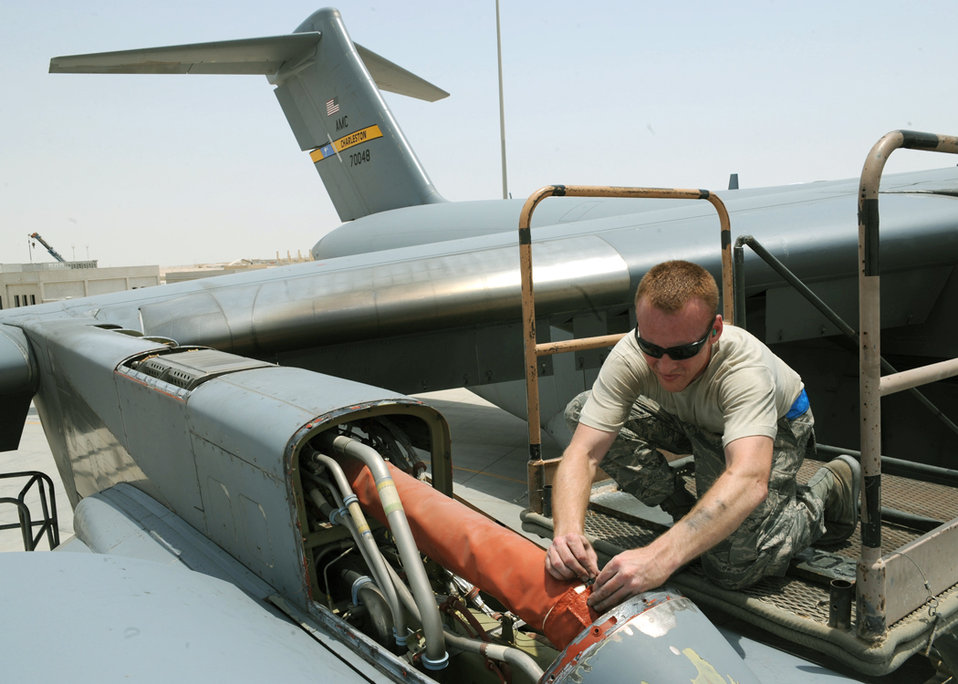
Checking it out

Tech. Sgt. Allen Minner performs preventative maintenance on a C-17 Globemaster III at an air base in Southwest Asia. Sergeant Minner is an electrical and environmental craftsman with the 8th Expeditionary Aircraft Maintenance Squadron and is deployed from Joint Base Charleston, S.C.